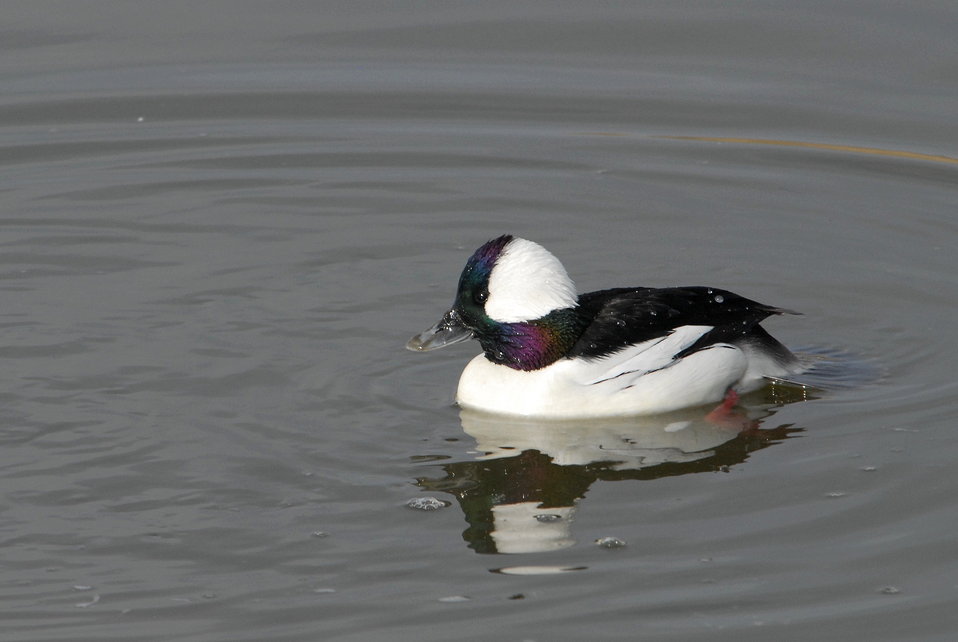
Bufflehead (male)